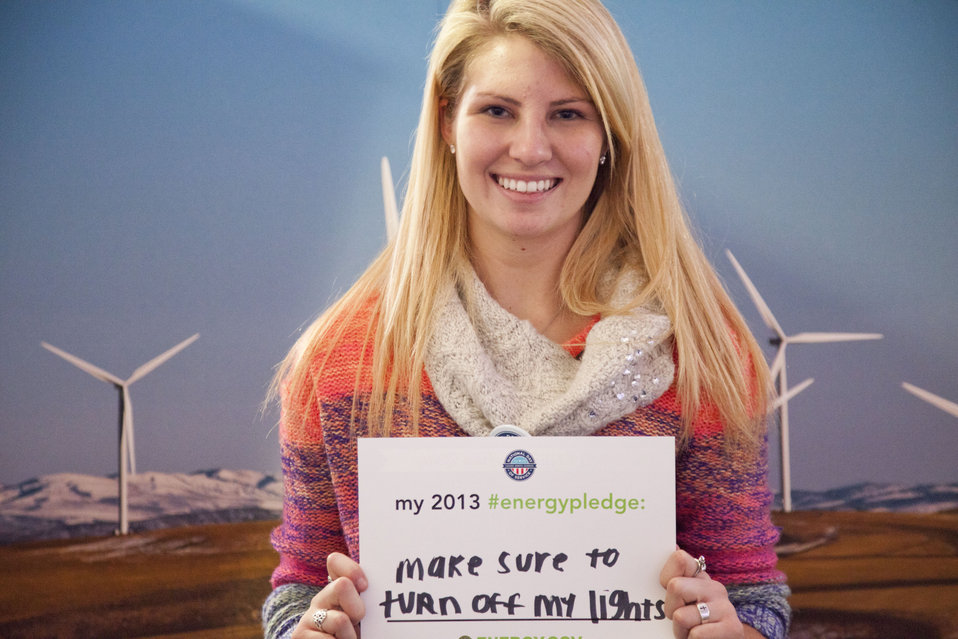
What's your #energypledge?